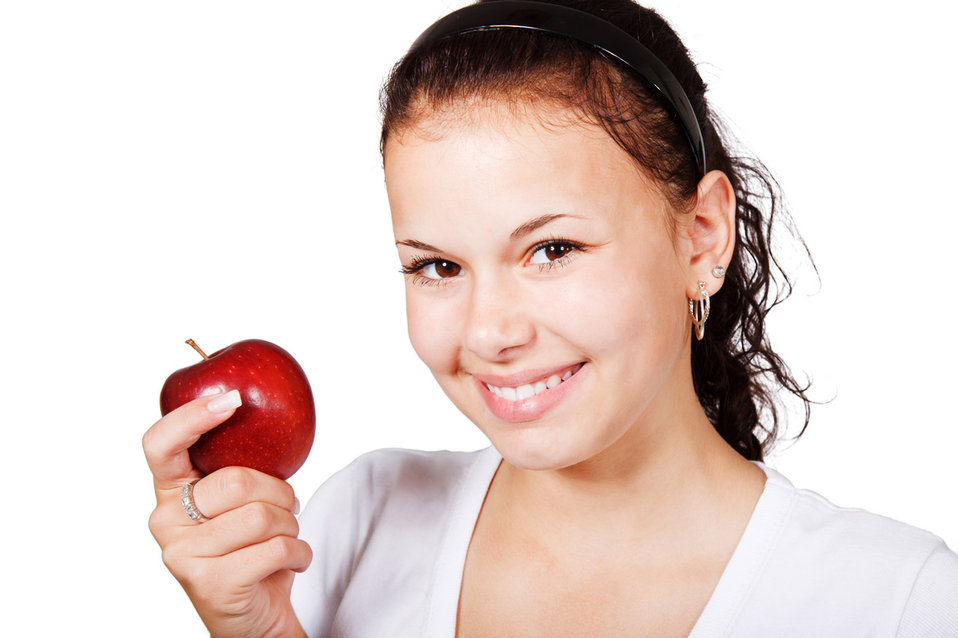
Girl with red apple

Young woman smiling holding red apple isolated on white background.